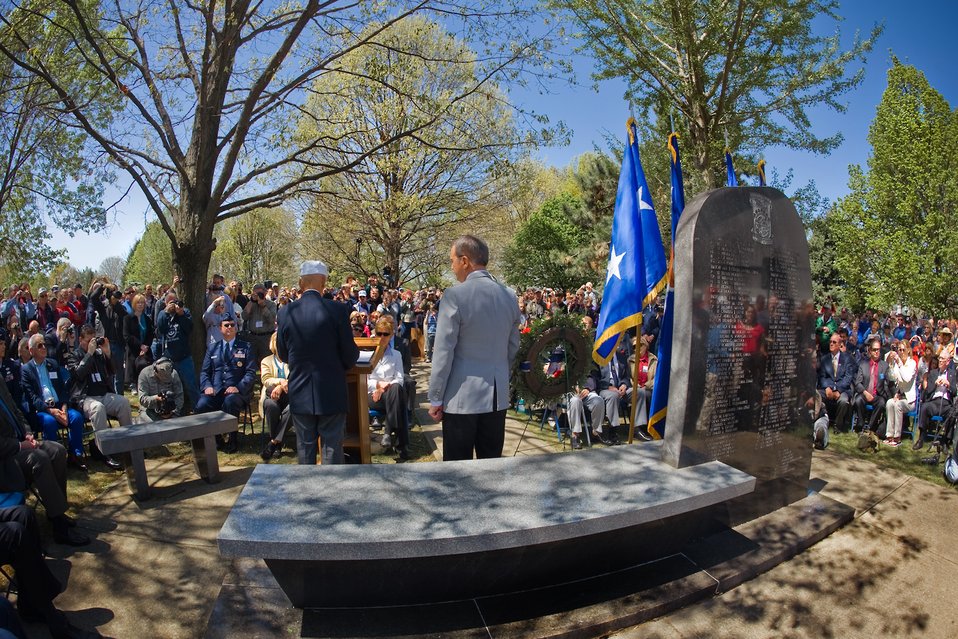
Doolittle Raiders Memorial Service

Lt. Col. Richard Cole (at podium) addresses those who attended the memorial service during the 68th reunion of the Doolittle Raiders. This event is being held at the National Museum of the U.S. Air Force at Wright-Patterson Air Force Base, Ohio on April 18, 2010. Three of the remaining eight surviving Doolittle Raiders attended this service.